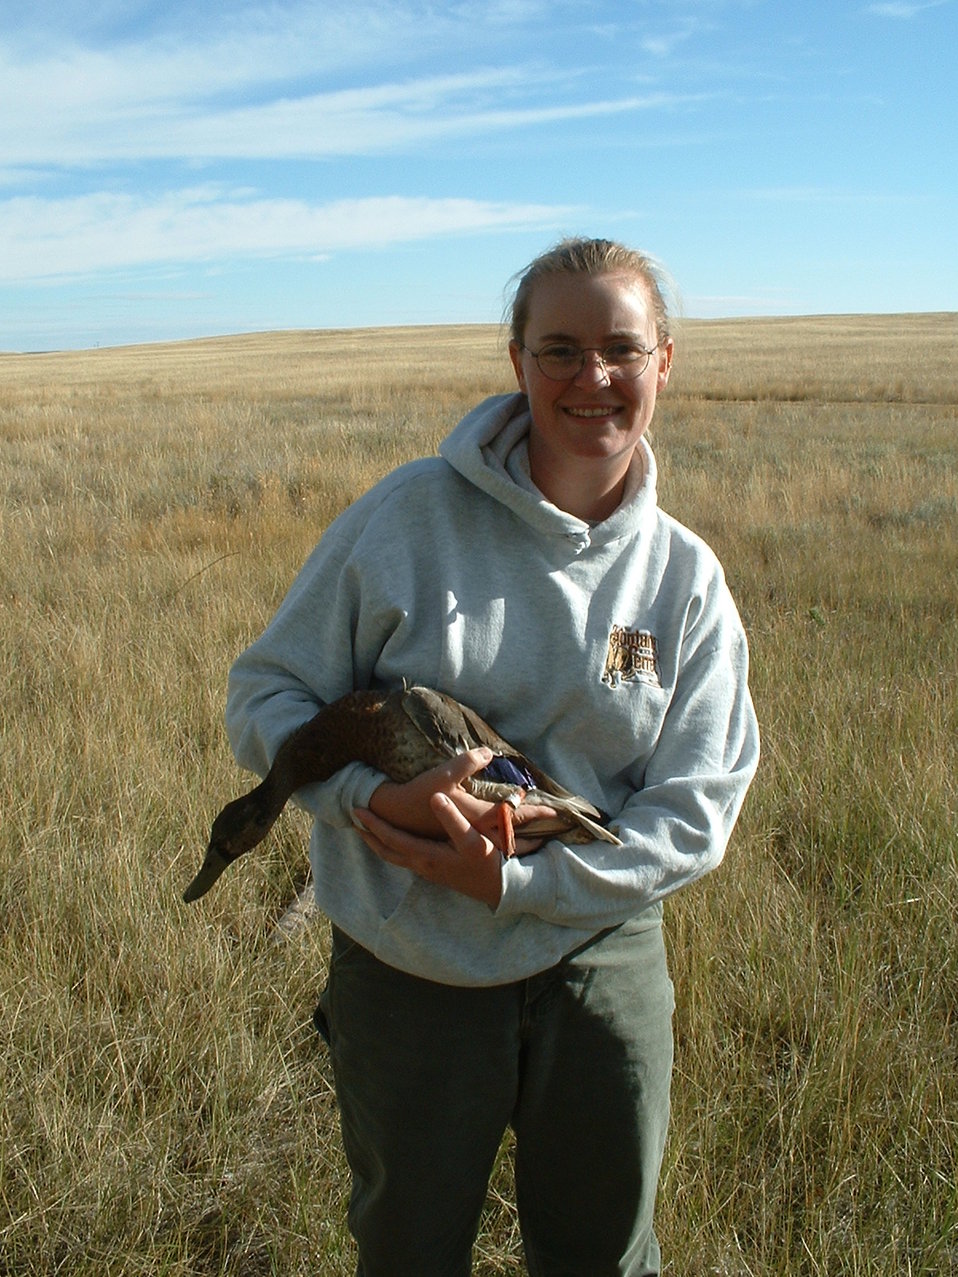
Ready to be Released

Banding waterfowl on Bowdoin NWR, a mallard is ready for release.